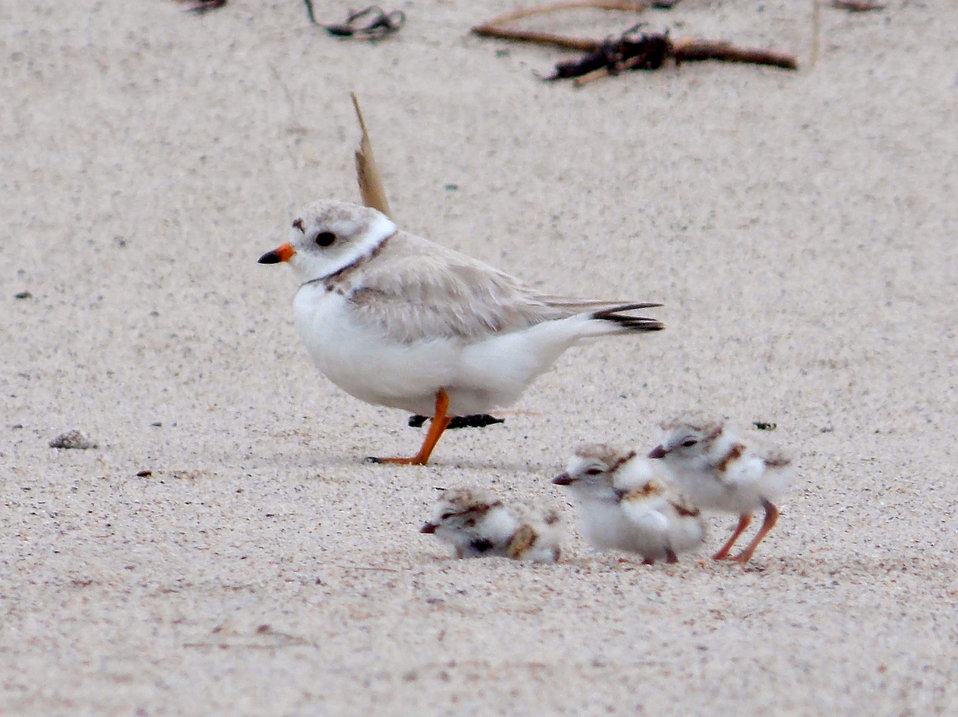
Piping Plover and Chicks

Piping plover chicks are hatching! This is a picture of three chicks and parent from 2013.